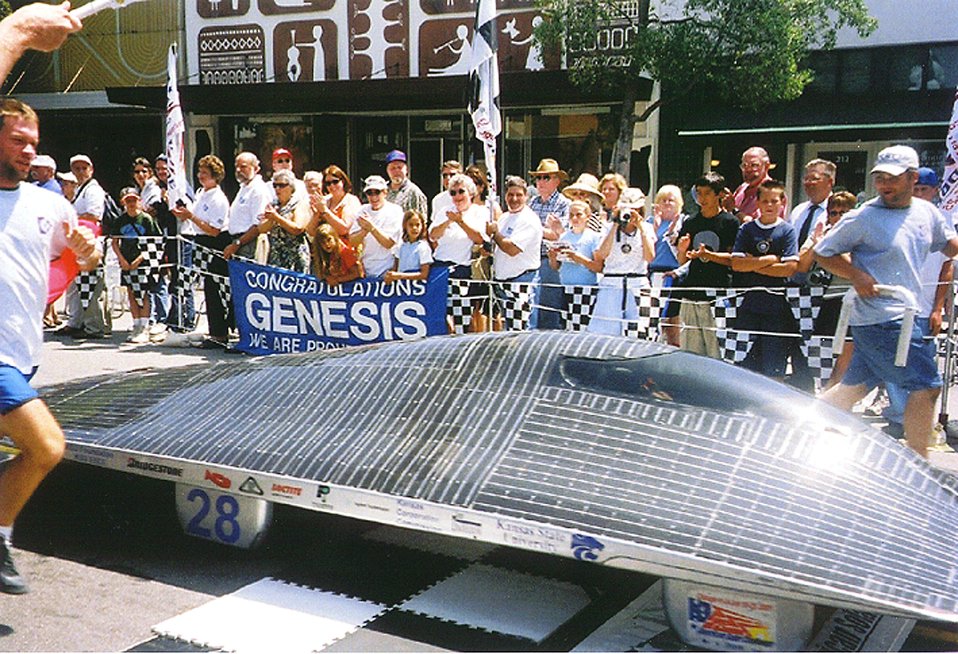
THE KANSAS STATE UNIVERSITY SOLAR CAR CROSSING THE FINISH LINE.

THE AMERICAN SOLAR CHALLENGE (SUNRAYCE) 2001, THE LONGEST SOLAR CAR RACE IN THE WORLD, IS A BIENNIAL EDUCATIONAL SPORTING EVENT IN WHICH UNIVERSITY TEAMS, COMPANIES, AND CLUBS FROM AROUND THE WORLD COMPETE TO BUILD AND RACE SOLAR POWERED CARS ACROSS THE UNITED STATES. THIS YEAR THE RACE BEGAN IN CHICAGO, ILLINOIS ON JULY 15, 2001 AND WAS COMPLETED ON JULY 25, 2001 IN CLAREMONT, CALIFORNIA, TRAVELING ALL ALONG OLD ROUTE 66.